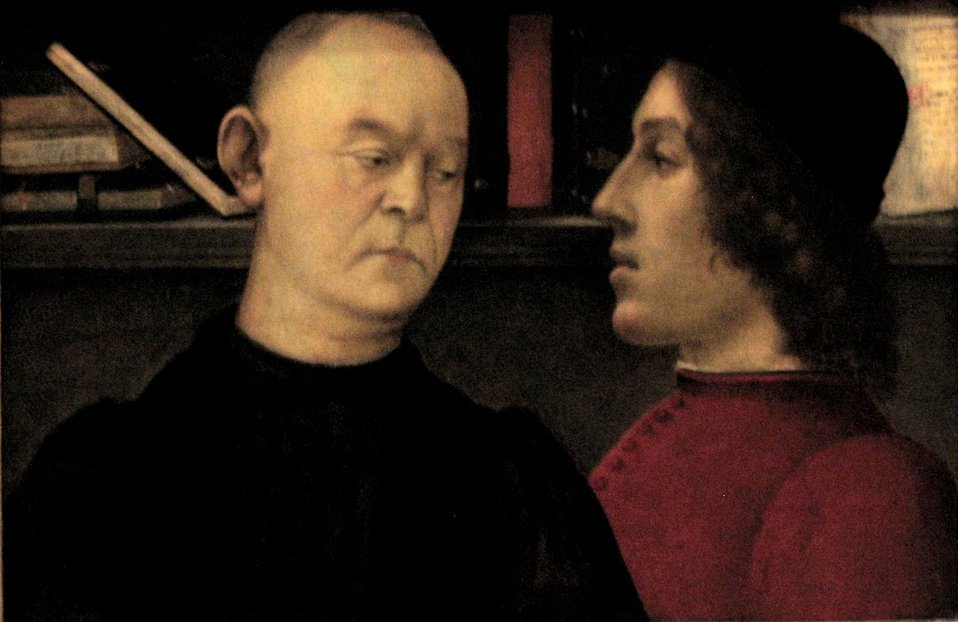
'Double portrait of Piero del Pugliese and Filippino Lippi', painting by Filippino Lippi, c. 1486, Denver Art Museum